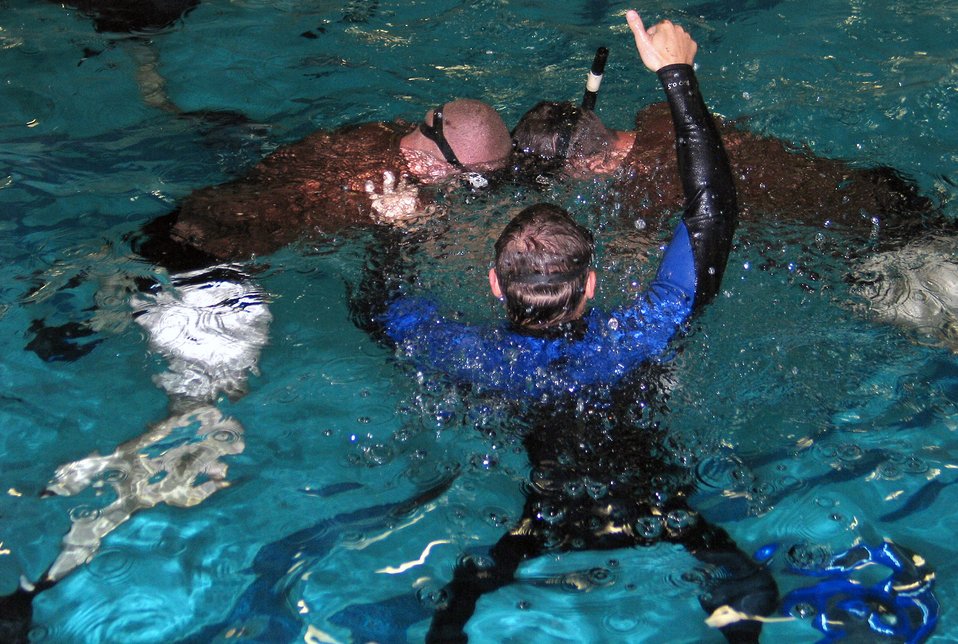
Combat rescue officers ready for field

Two combat rescue officer selection program candidates use one airway tube to breathe underwater Oct. 24 while a program instructor acts as a distraction at Fairchild Air Force Base, Wash. CRO candidates undergo six days of mental, physical and psychological training and evaluations. Real-world field operations are simulated as much as possible, and those who finish the program and selected as CROs are prepared to command ground recovery teams.